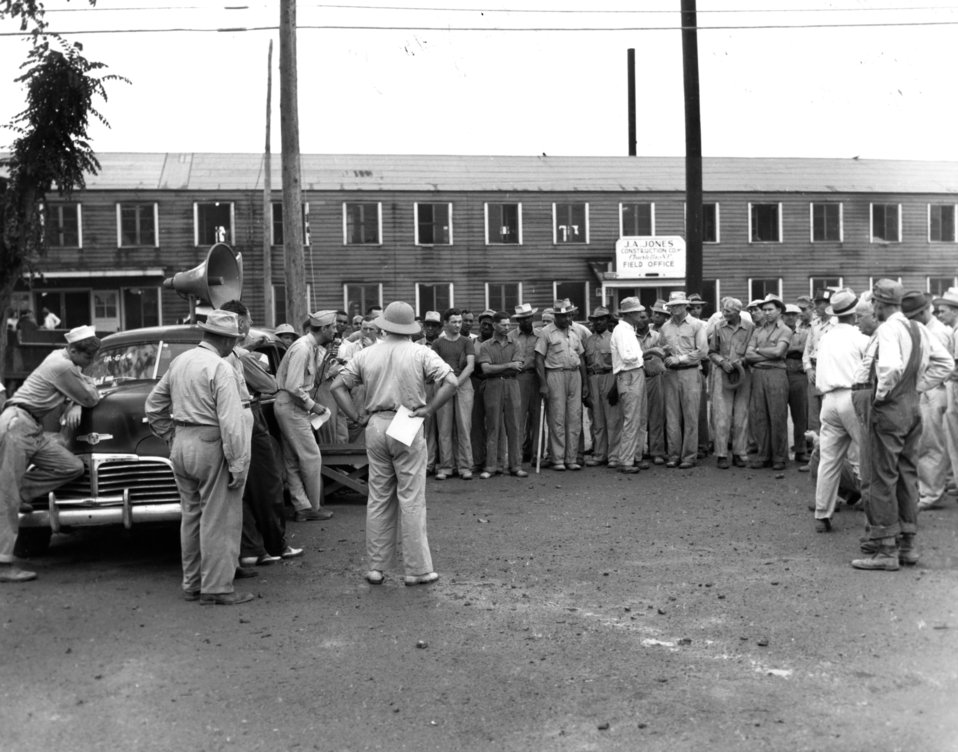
Army Activity at Oak Ridge